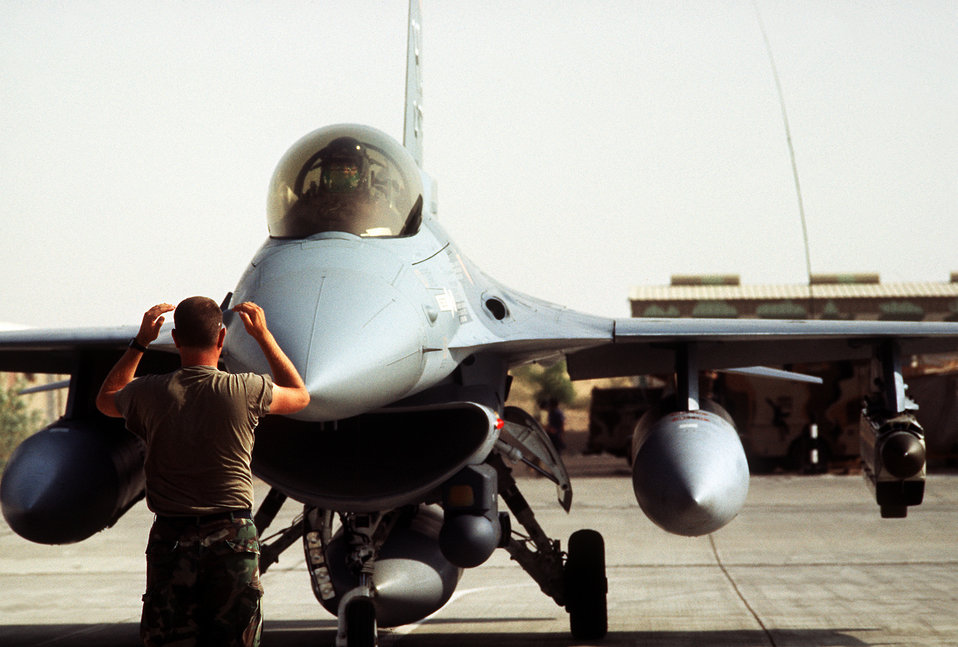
F-16C Fighting Falcon

1990's -- A ground crewman guides a 388th Tactical Fighter Wing F-16C Fighting Falcon aircraft onto the taxiway. The 388th TFW is deploying to Saudi Arabia to take part in Operation Desert Shield. Mounted on the aircraft's left outboard wing pylon is an AN/ALQ-131 Electronic CounterMeasures pod; mounted on the side of the engine intake is a Low Altitude Navigation, Targeting Infrared Night navigation pod.